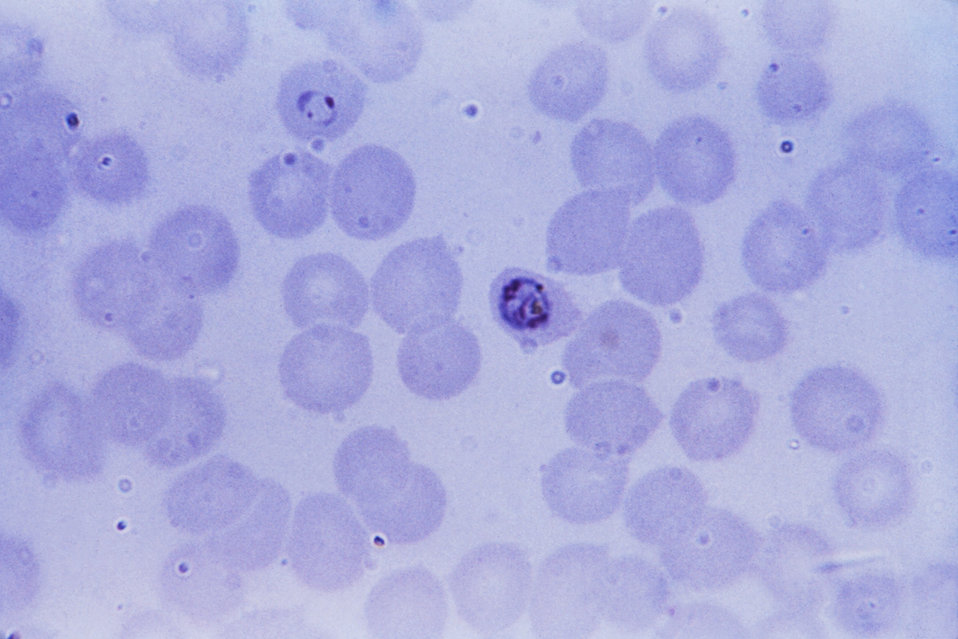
This micrograph revealed an immature Plasmodium falciparum schizont (Cntr), and a ring form (Lower Rt).